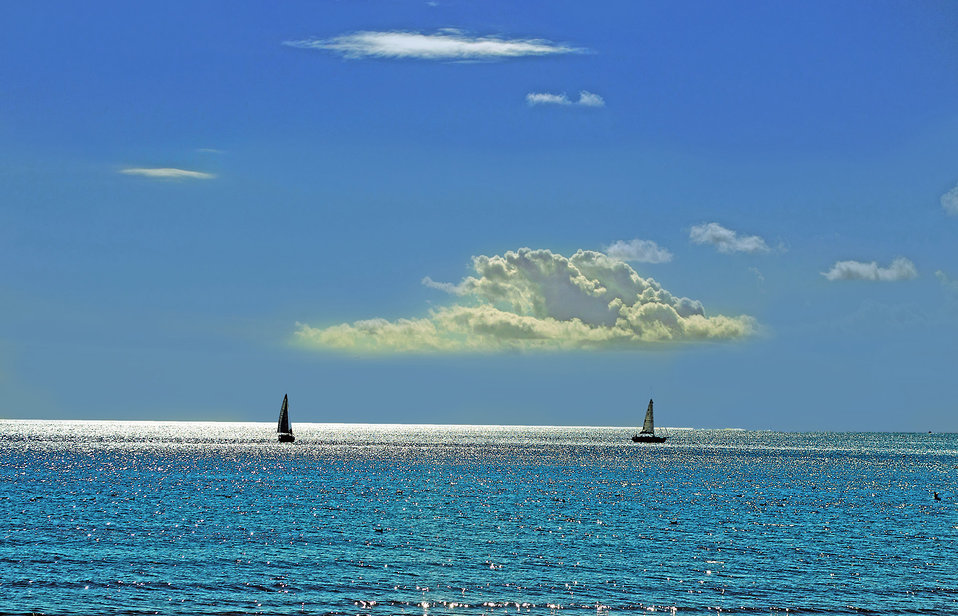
Sea - landscape.